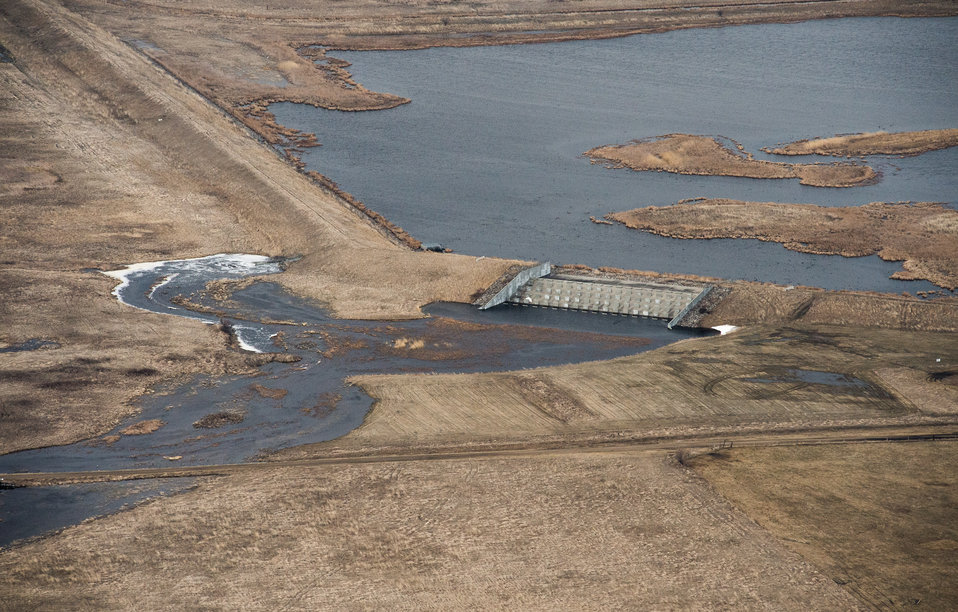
English Coulee Watershed Dam, a Public Law PL83-566 Small Watershed Program, in Grand Forks County, ND, on Tuesday, April 30, 2013.